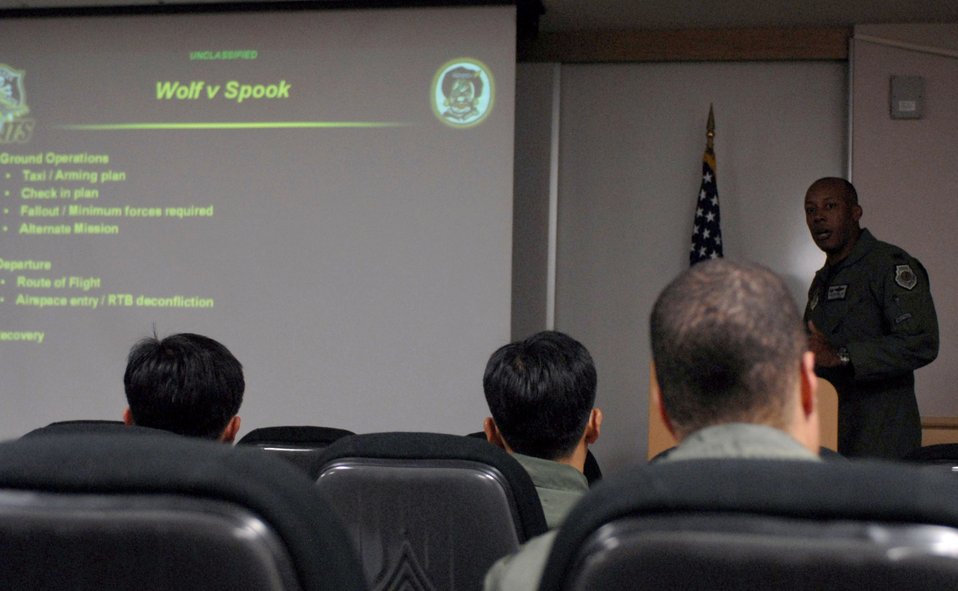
8th FW commander, ROKAF fly in training mission

Col. C.Q Brown 8th Fighter Wing commander, briefs pilots from the Republic of Korea Air Force's, 111th Fighter Squadron, along with pilots from the 8th Fighter Wing here Nov. 14. ROKAF pilots and Wolf Pack pilots trained together on a joint mission to give pilots from both countries a chance to work together and hone their warfighting skills.